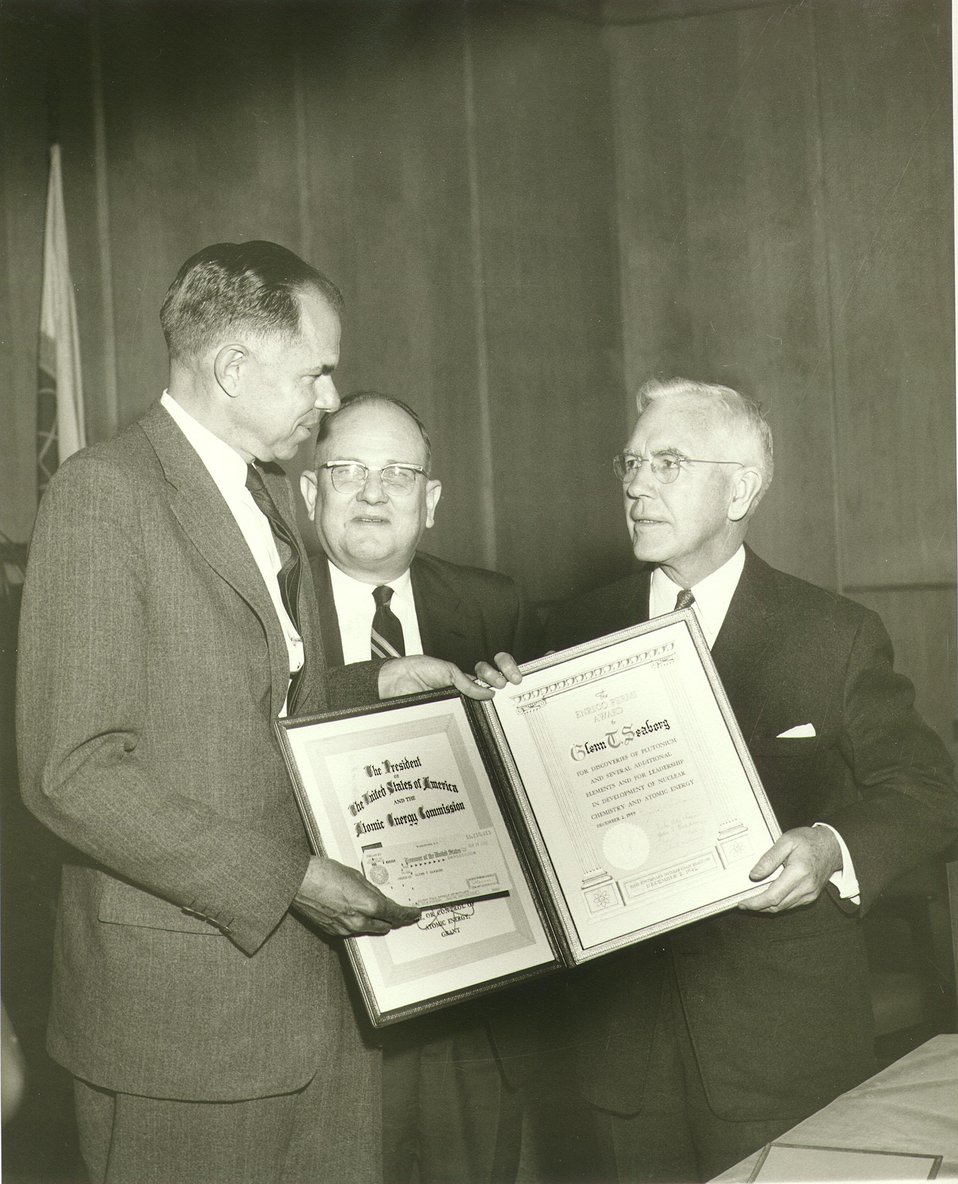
Glenn T. Seaborg. 1959.